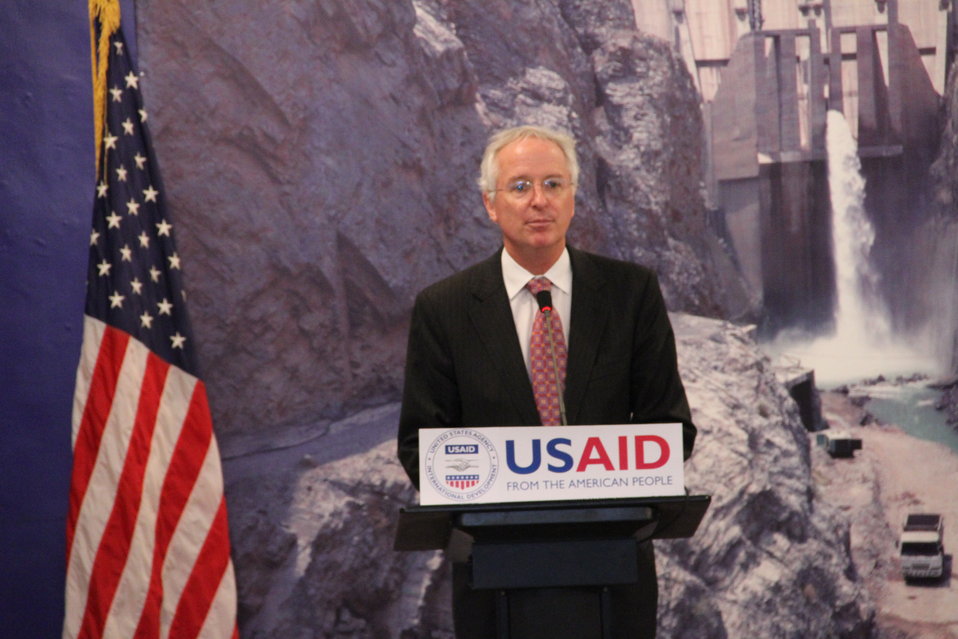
Photo Exhibition Celebrate US-PAK Cooperation at PNCA, Islamabad on April 13, 2012

Mr. Cameron Munter, Ambassador for US addressing the media and the participants